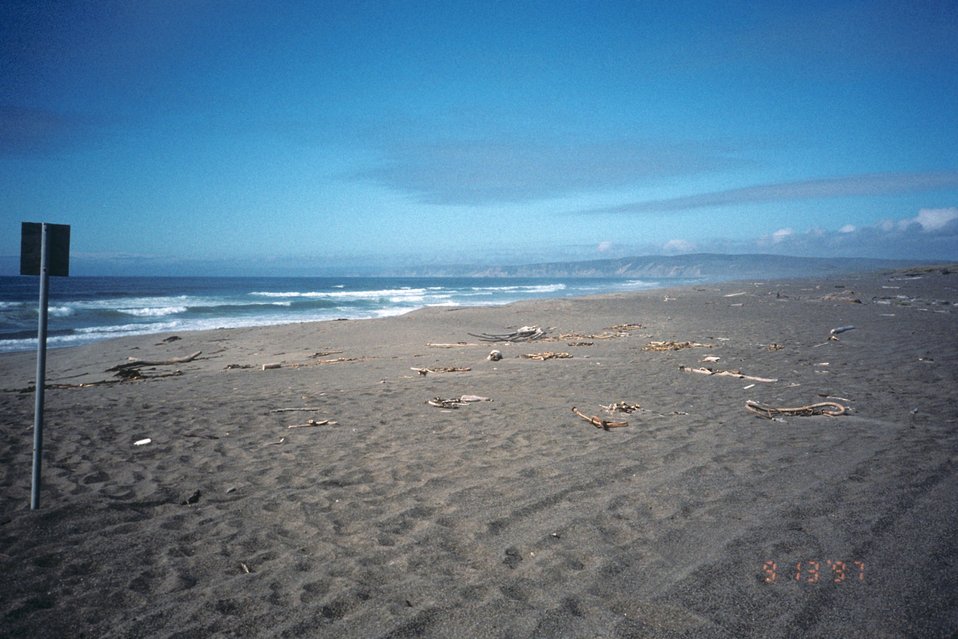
Point Reyes Great Beach south end. Driftwood and dried-up kelp along a lonely stretch of beach.